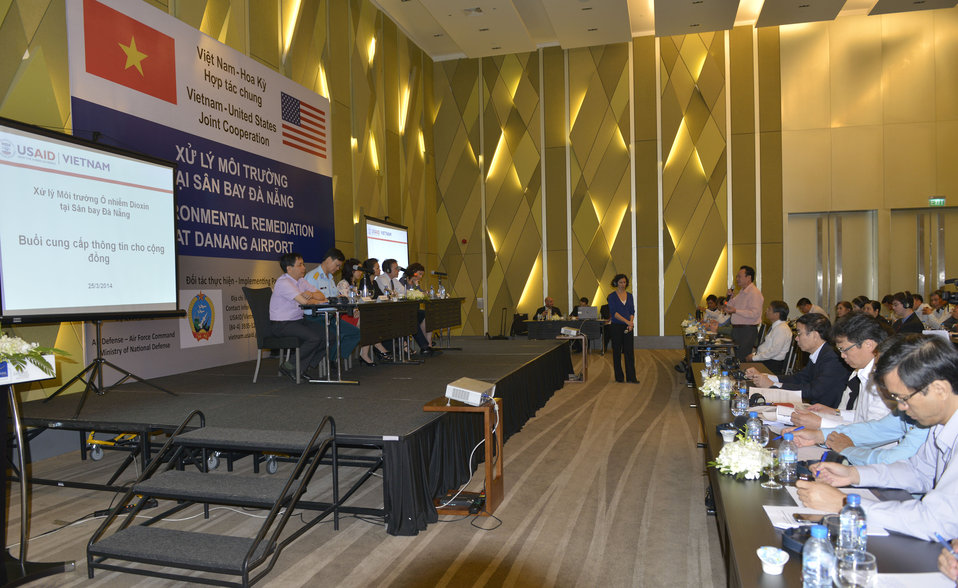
Community Outreach Session on Environmental Remediation of Dioxin Contamination at Danang Airport Project

Danang, March 25, 2014.